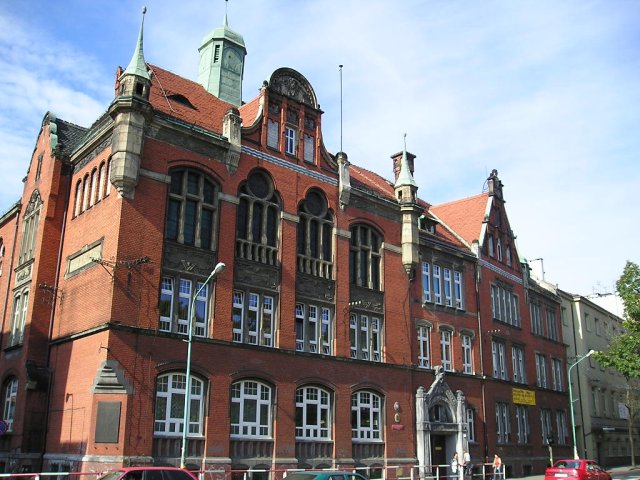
Polski: Budynek IV Liceum Ogólnokształcącego im. Marii Skłodowskiej-Curie w Chorzowie. The building of the Maria Skłodowska-Curie Secondary School No 4 in Chorzów, Poland.